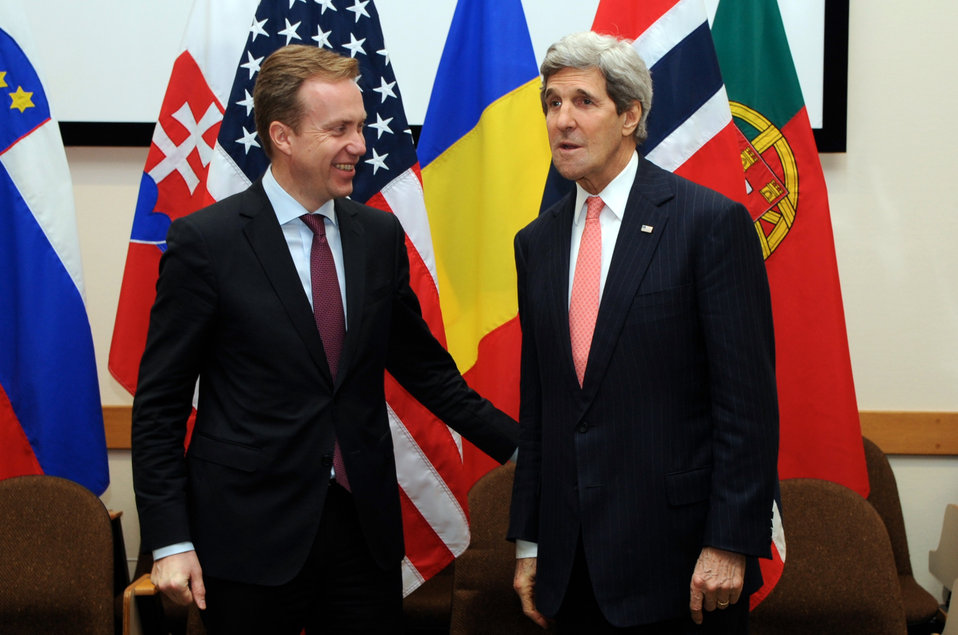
Secretary Kerry Meets With Norwegian Foreign Minister Brende in Brussels

U.S. Secretary of State John Kerry and Norwegian Foreign Minister Borge Brende stand for photographers before an informal meeting on the sidelines of the NATO Ministerial Meeting in Brussels, Belgium, on April 2, 2014.